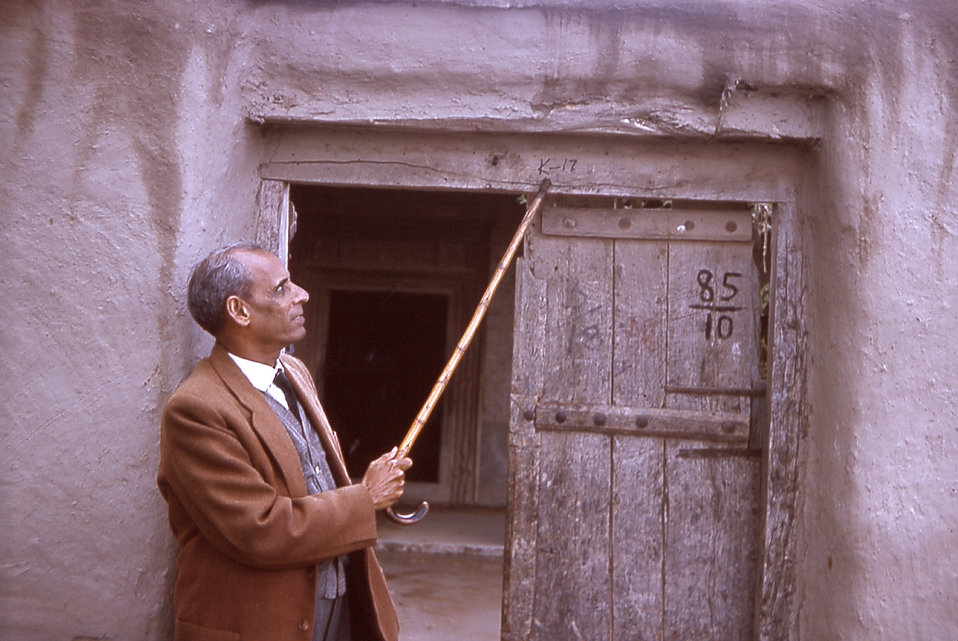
This is a photograph of a local health official named Nurahmed pointing to a house number in a Gujarat, India village.